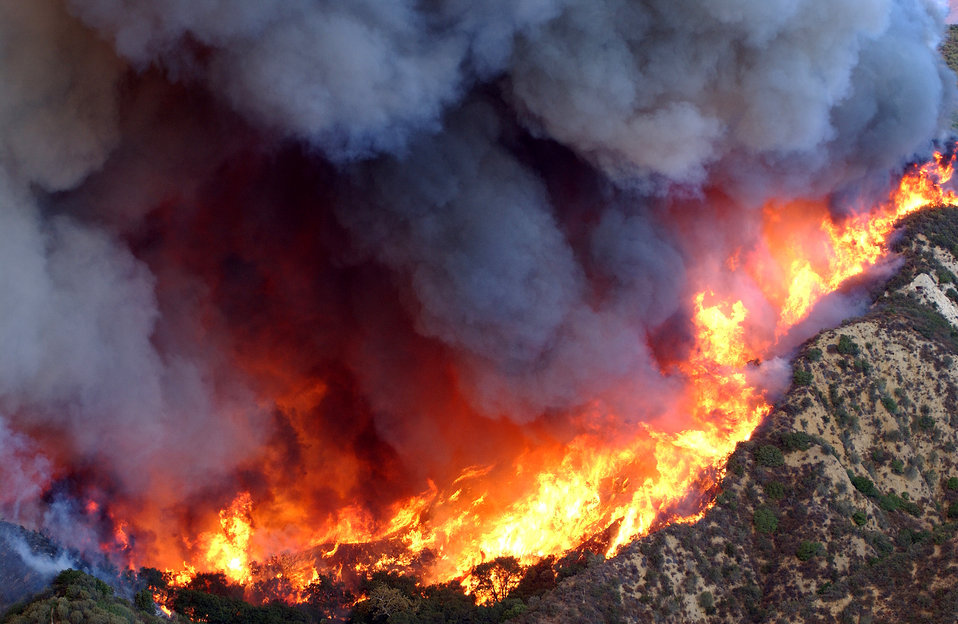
California Fires

SOUTHERN CALIFORNIA -- Flames of the Simi Valley fire ravage a Southern California mountain side. This is one of many catastrophic fires that plauged Southern California. U.S. Air Force C-130 Hercules pilots flew eight C-130 cargo airplanes and dropped 129,600 gallons of retardant on the Simi fire during 48 sorties and 32 flying hours as of Oct. 29.